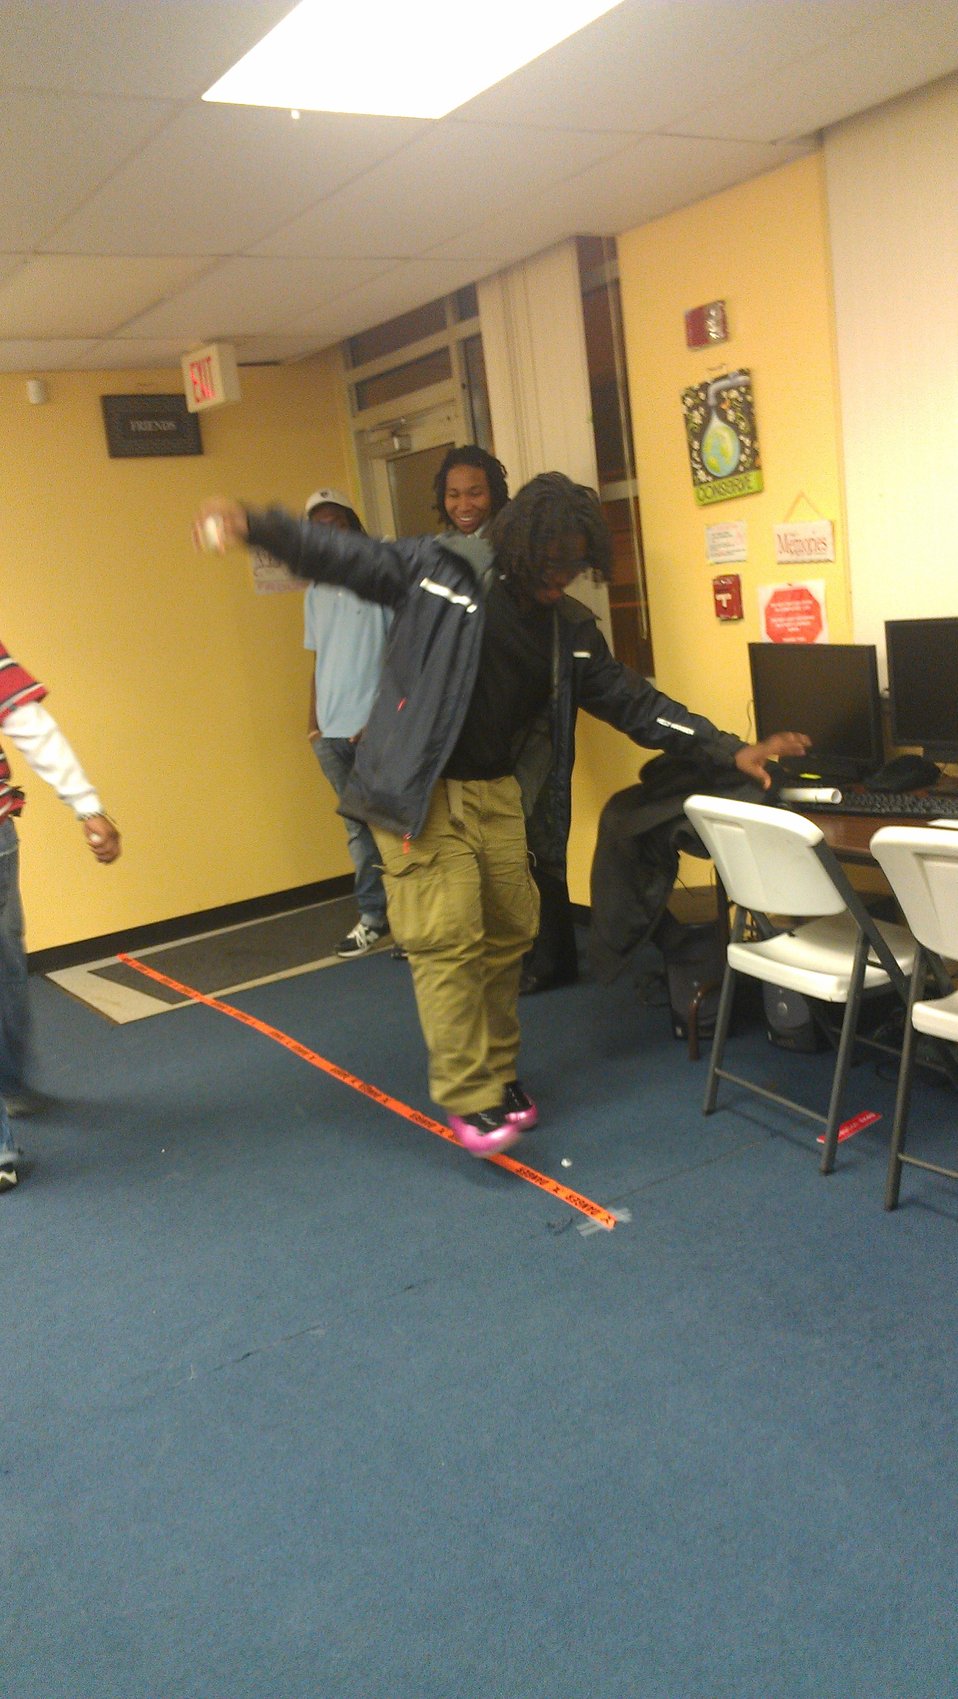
Washington, D.C. Youth, NDFW 2013

Sasha Bruce Youthwork, Inc. sponsor 2013 NDFW events for youth in Prevention Centers in Wards 5 & 6, Washington, D.C.